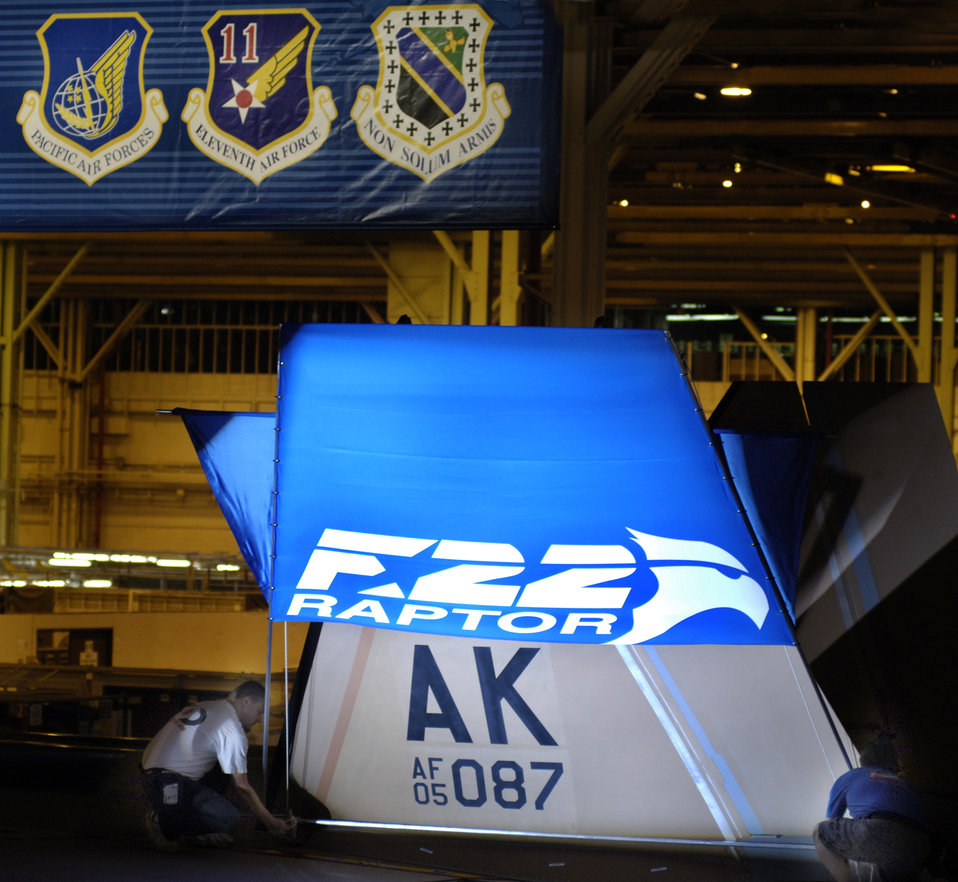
PACAF unveils first F-22

The tail section of an F-22 Raptor being assigned to Pacific Air Forces is prepared for an unveiling ceremony Aug 3 at the Lockheed Plant in Marietta, Ga. The aircraft, which is still under construction, will be the first of 36 F-22s assigned to Elmendorf Air Force Base, Alaska, beginning next year.